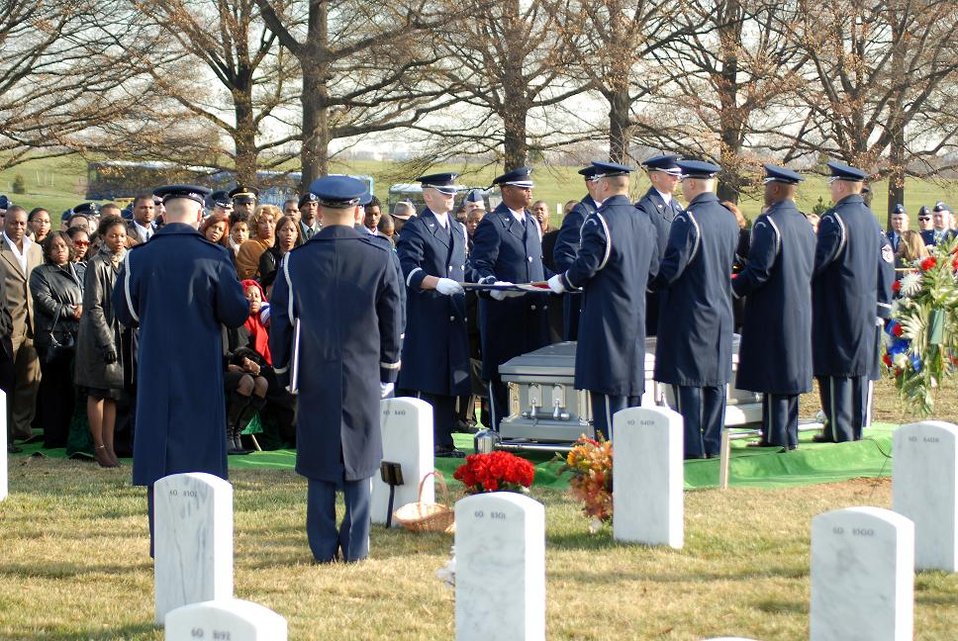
Honor guar lays to rest Airmen killed in Iraq

The body bearers fold the American flag while the chaplain performs his part of the ceremony. Friends and family attended to show their final respects for Capt. Kermit Evans who was killed Dec. 3 in Iraq. Captain Evans was killed in an emergency helicopter landing near the shore of Lake Qadisiyah in Al Anbar Province, Iraq. Captain Evans was one of 16 people aboard the Marine CH-46 helicopter and one of four servicemembers killed as a result of the landing. He is survived by his wife and 13-month-old son, Kermit Jr. Captain Evans was the commander of the 27th Civil Engineer Squadron Explosives Ordnance Disposal Flight at Cannon Air Force Base, N.M.